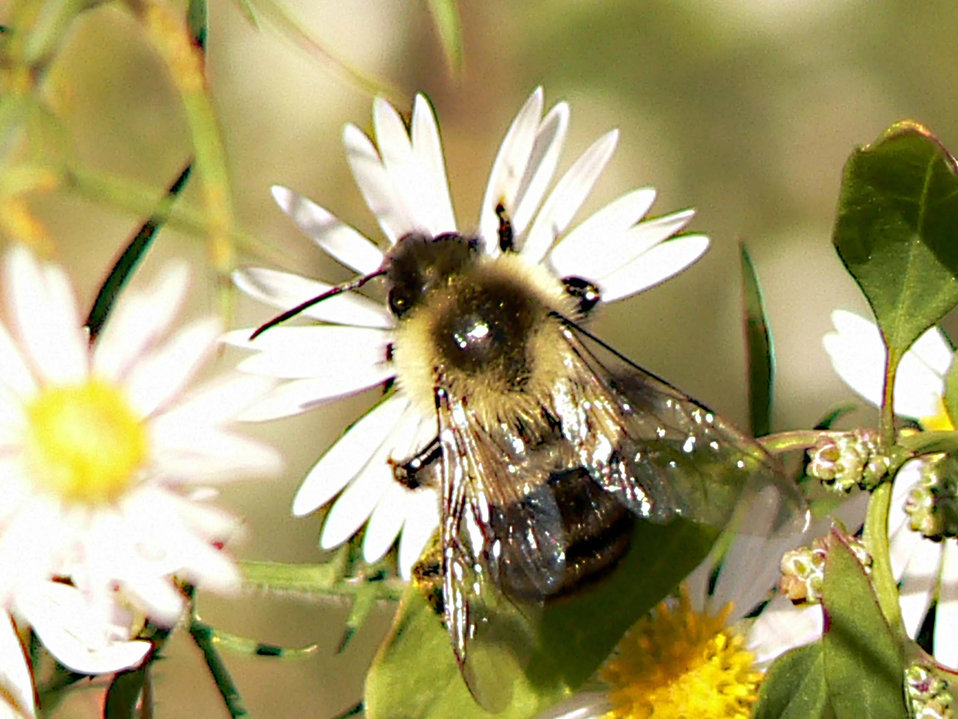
Bumblebee

Photo credit: USFWS/Laura Perlick

Changes in climate may result in mismatches in time or space between closely related species, such as plants and their pollinators